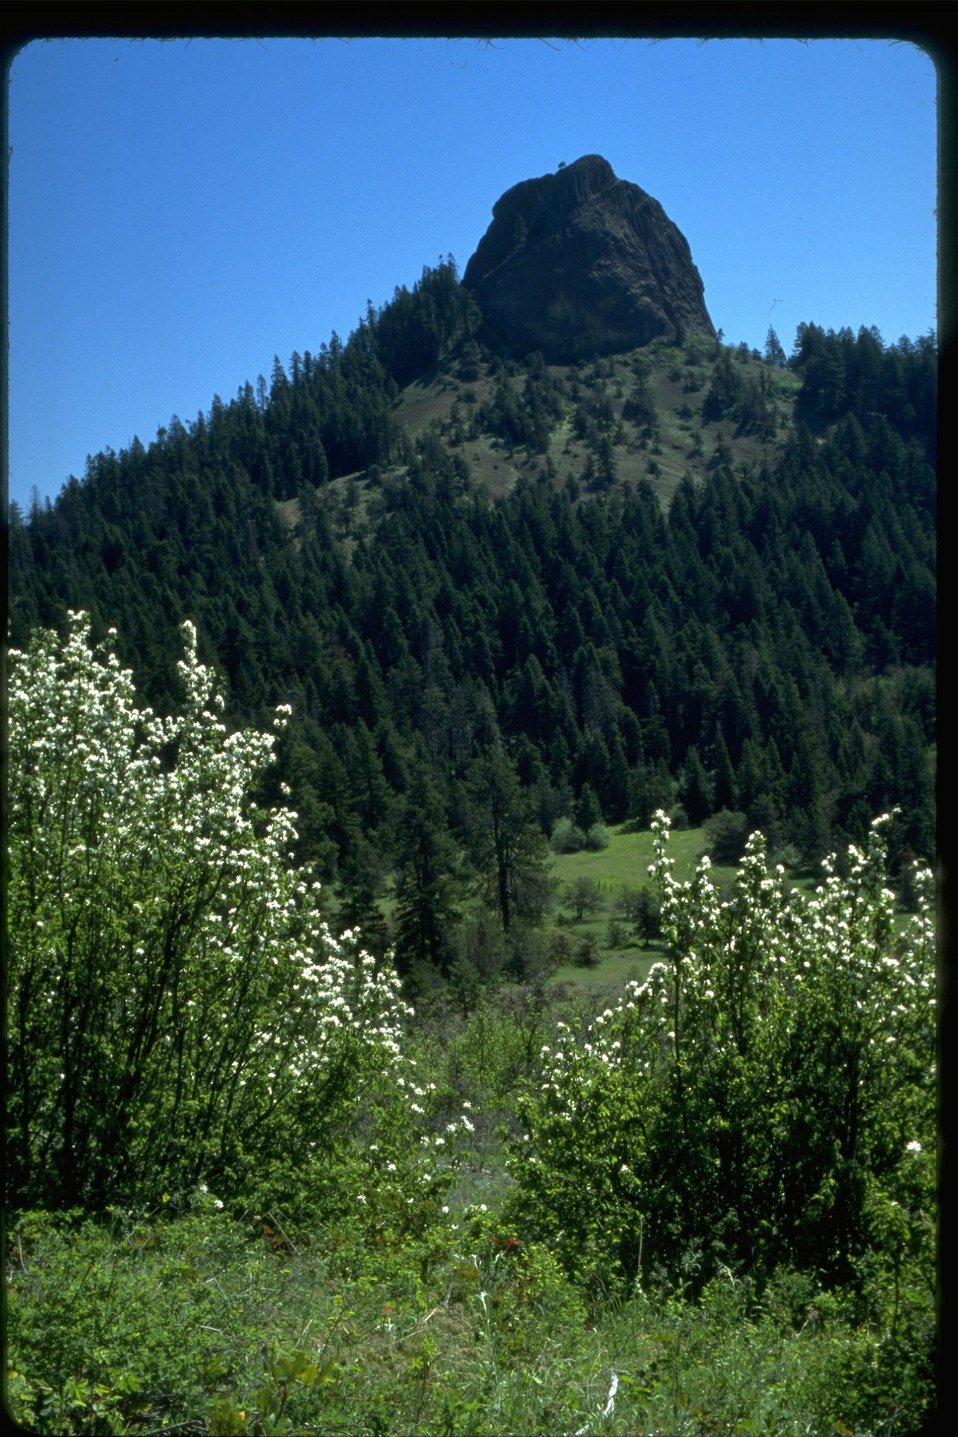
Medium shot of Service Berry in foreground and Pilot Rock in background.